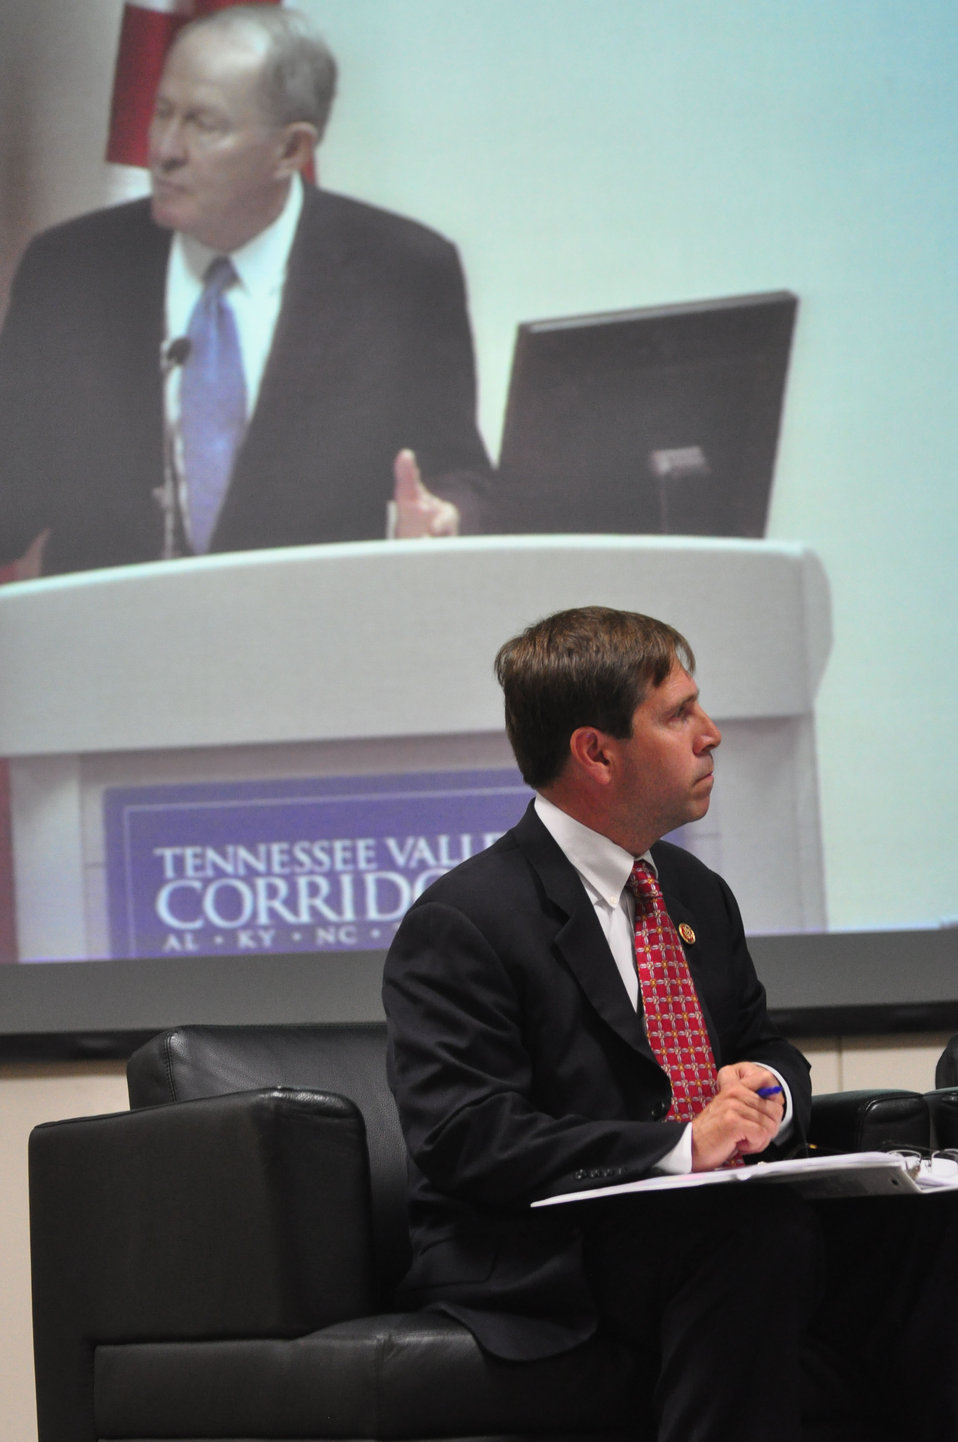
U.S. Congressman Chuck Fleischmann Tennessee Valley Corridor Summit Oak Ridge

13-062 DOE photo Lynn Freeny 5-29-2013 Oak Ridge Tennessee